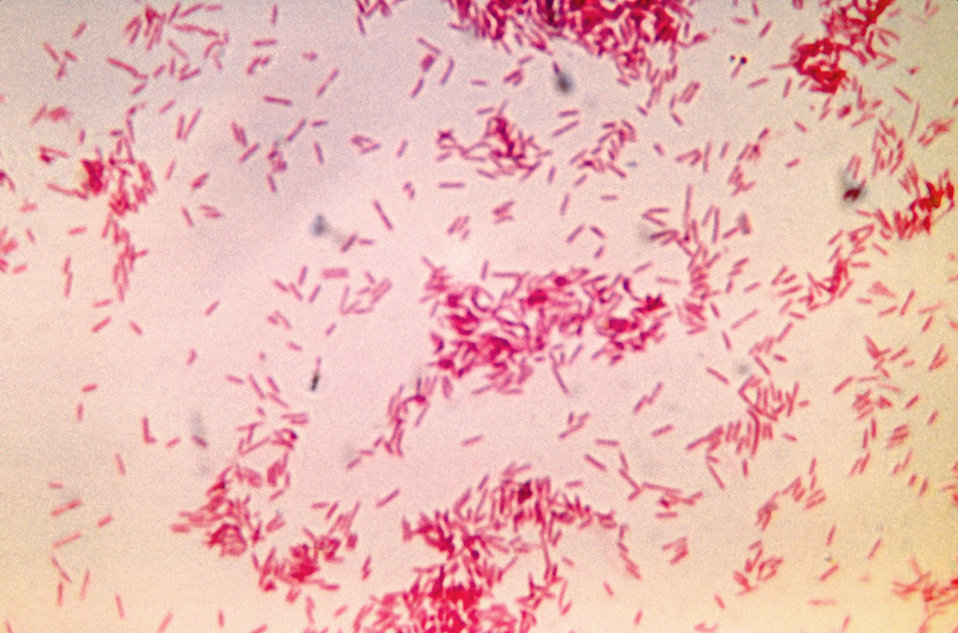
This is a photomicrograph of Fusobacterium russii cultured in a thioglycollate medium for 48 hours.